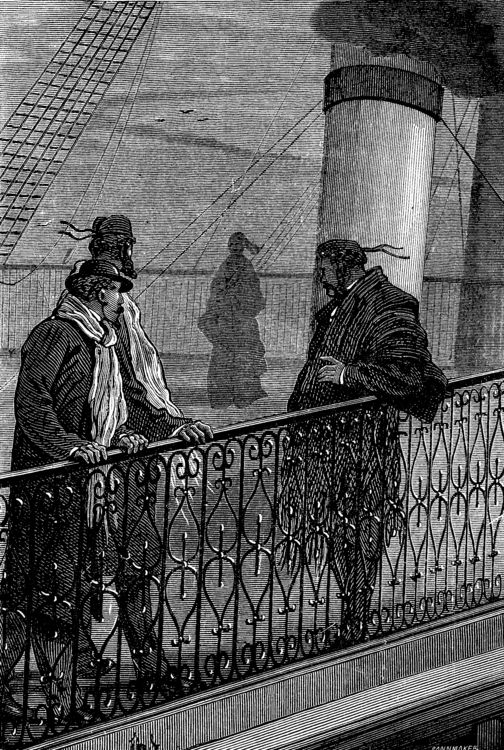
An illustration from Jules Verne's novel 'A Floating City' (1869) drawn by Jules Férat. Polski: Ilustracja powieści Juliusza Verne'a 'Pływające miasto' (1869) autorstwa Julesa Férata. Français : Jules Verne: 'Une Ville flottante' (1869), dessins par Jules Férat. Orginal text: Français : La dame noire.